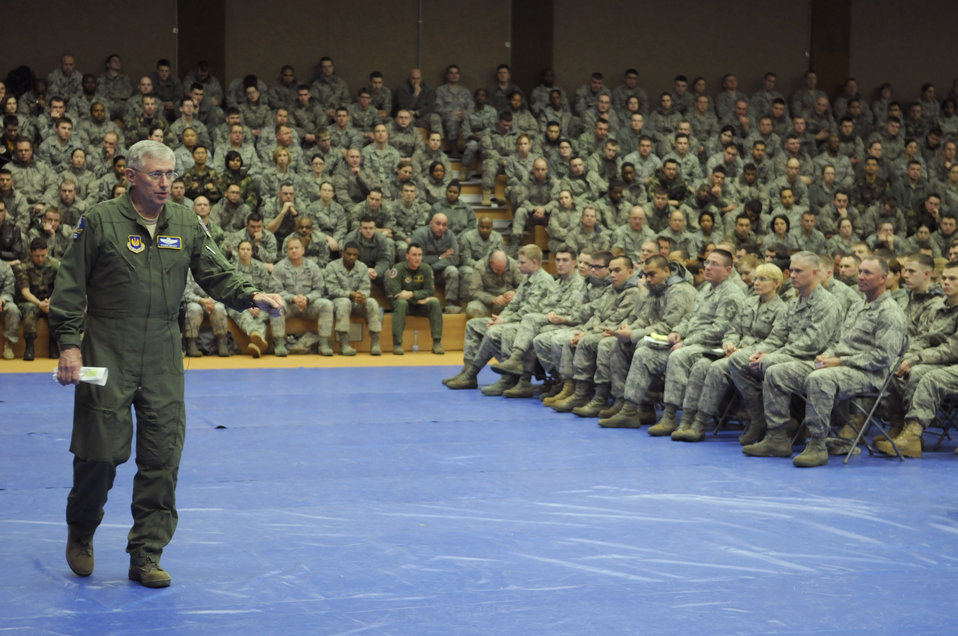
Air Forces in Europe commander visits Spangdahlem, discusses legacy fighter retirements

Gen. Roger A. Brady speaks to approximately 1,250 Sabers about the proposed combat Air Force's restructuring, the importance of the Air Force in today's operations and how Spangdahlem Air Base fits into the USAFE mission Jan. 8, 2010 at Spangdahlem AB, Germany. General Brady is the U.S. Air Forces in Europe commander.